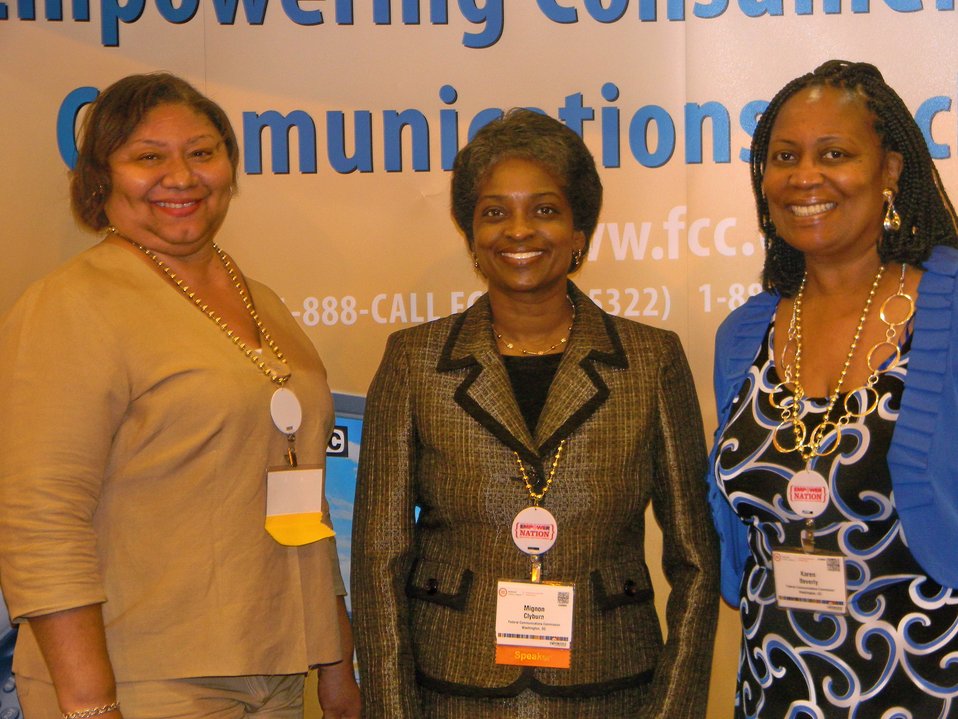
2012 National Urban League Conference

Commissioner Mignon Clyburn, Donice Jones(FCC), & Karen Beverly(FCC) at the FCC booth.